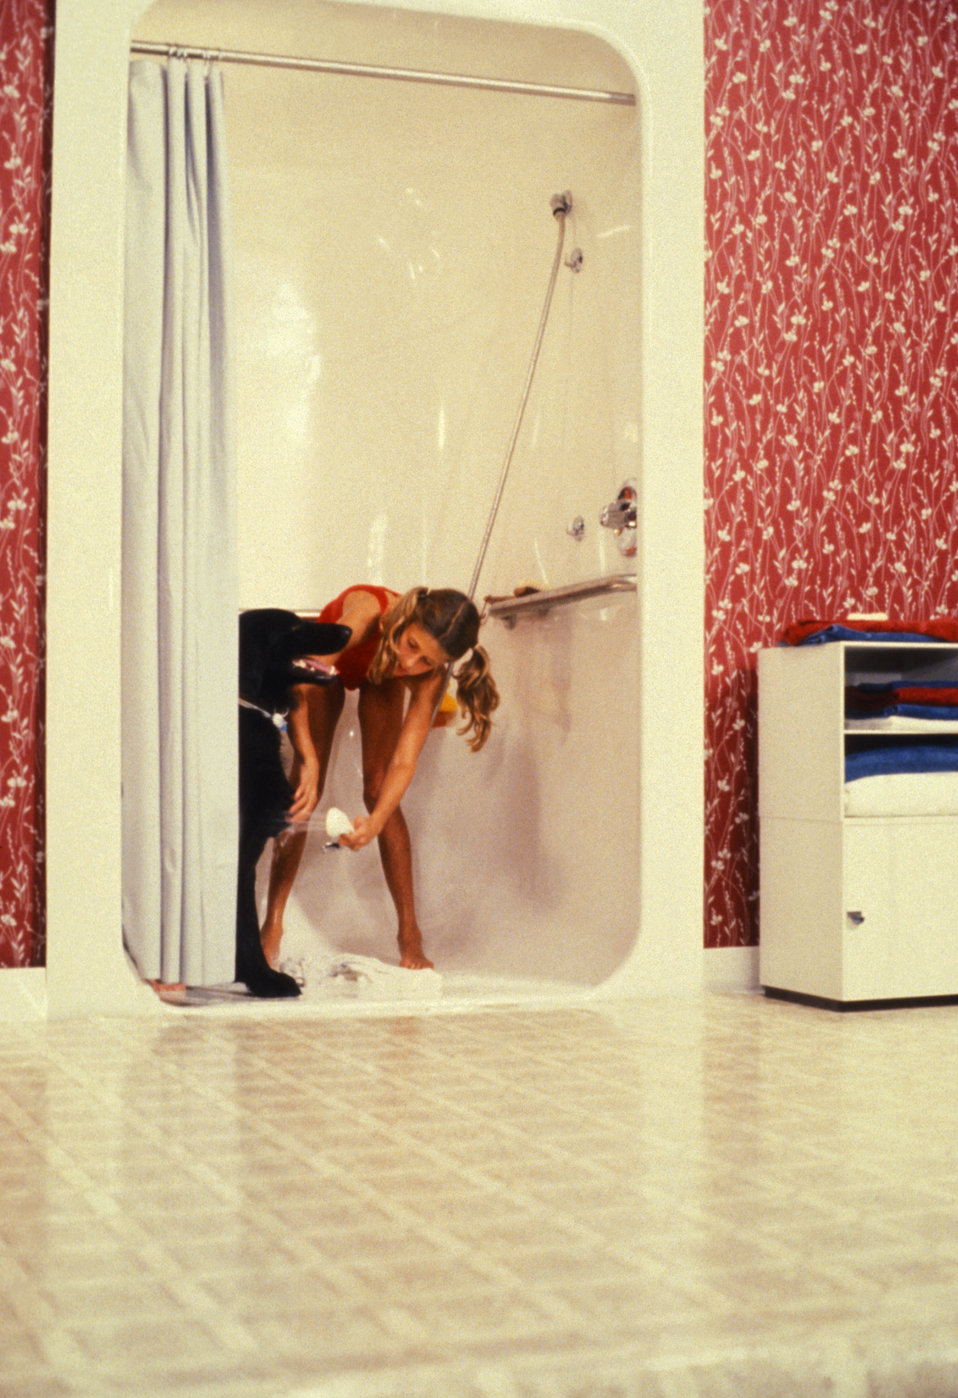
This was one of two images (PHIL# 9195 - 9196), depicting the usage of a white fiberglass 'curbless' shower stall, which was a single piece, thereby, minimizing assembly and installation times. In this particular photograph, a young girl was inside the shower unit, was shown as she was bathing her dog, using the shower head to deliver the flow of water directly to the dog, and not outside the shower. A curbless shower is much easier to use by those for whom stepping into a standard shower is dangerous or impossible, as well as support a variety of activities other than a solitary shower, as evidenced here with this dog-bathing scenario.